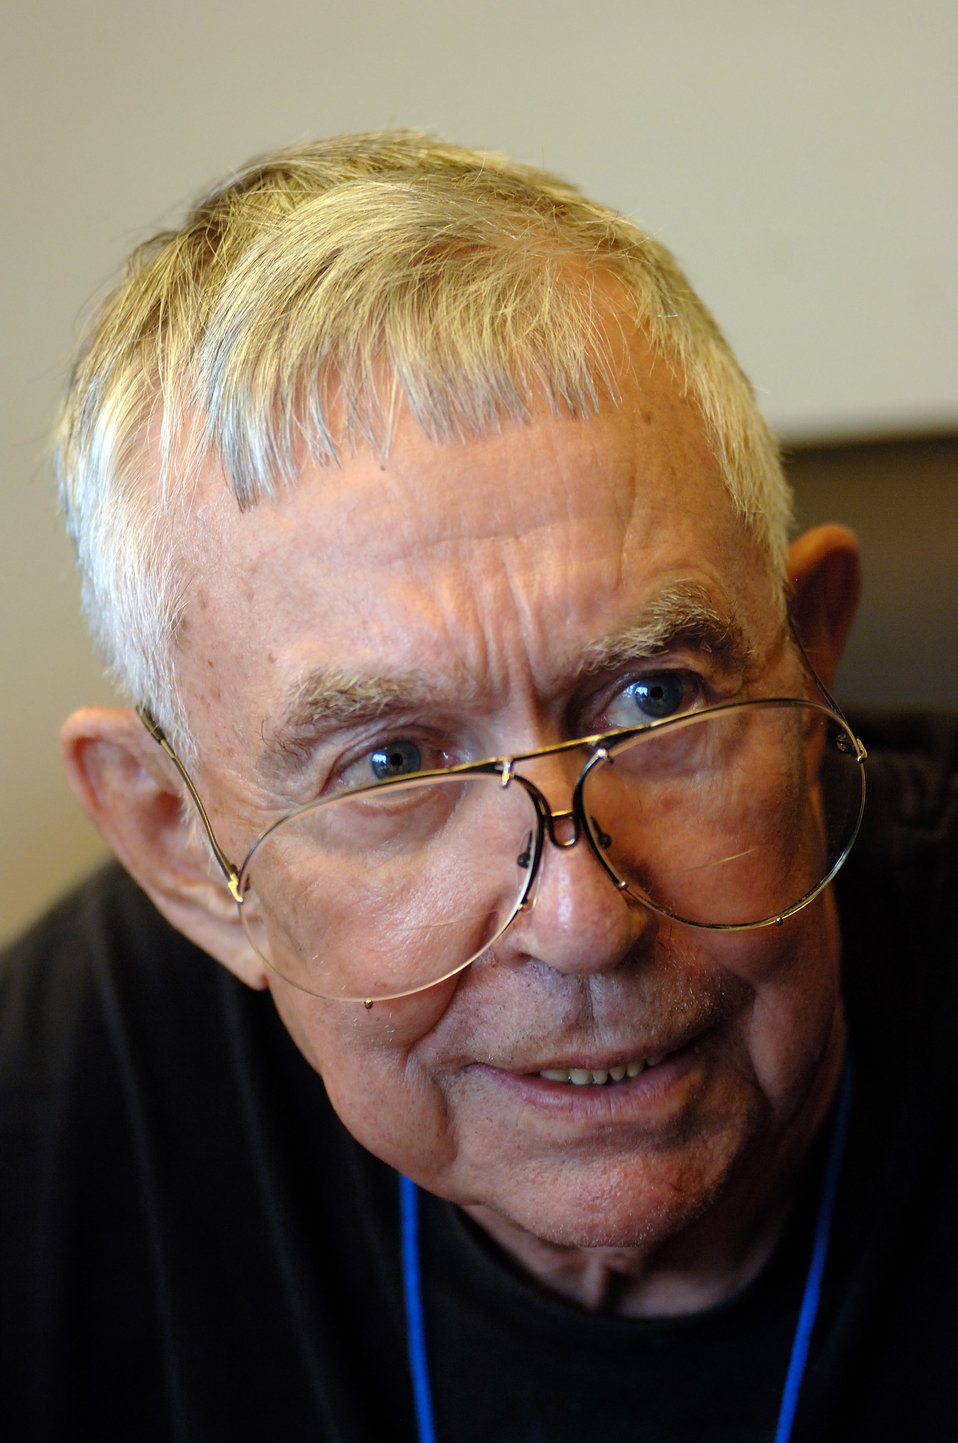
Revisiting the country of a forgotten war

Retired Lt. Col. Harold Fischer, a fighter ace with 10 confirmed kills, talks about his time as a prisoner of war during the Korean War during an interview with the Washington Times Sept. 10 at Seoul, South Korea. Colonel Fischer has written three books about his tours in Korea and Vietnam, and he is touring South Korea this week with fellow veterans.